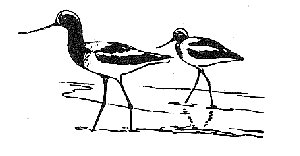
Illustration of avocets.